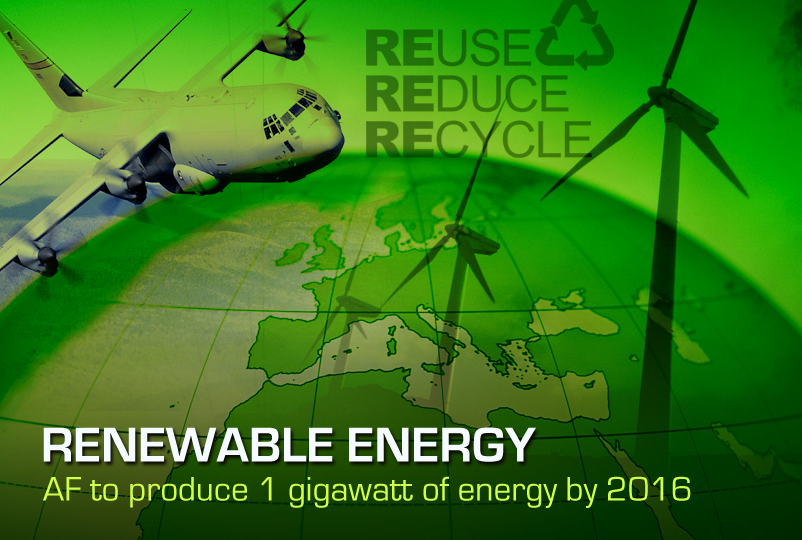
Renewable Energy